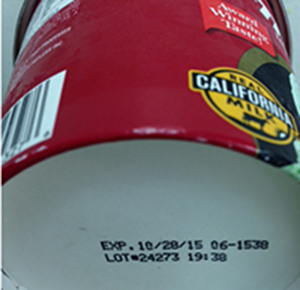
RECALLED – Ice Cream

June 4, 2014 – Product Recall – Rite Aid Voluntarily Recalls 16 oz. Pints of Mint ‘N Chip Thrifty Ice Cream
.